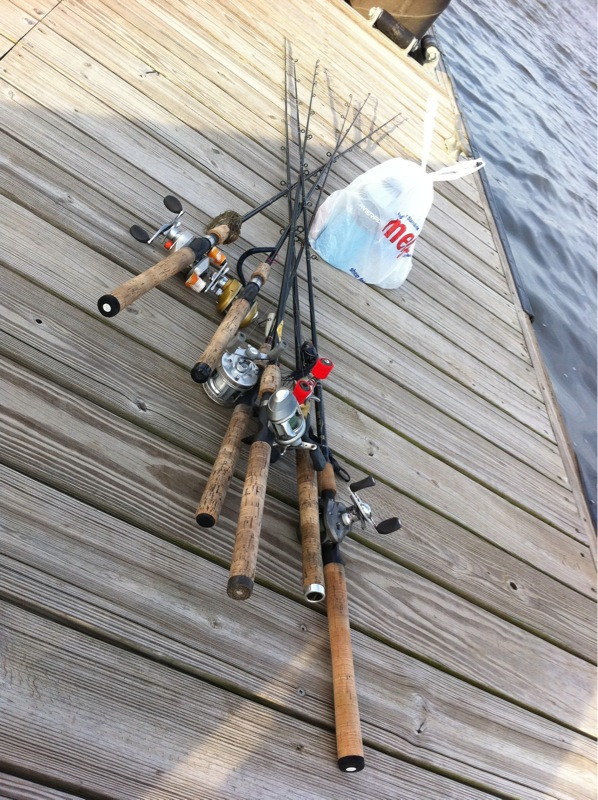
Let's go fishing!